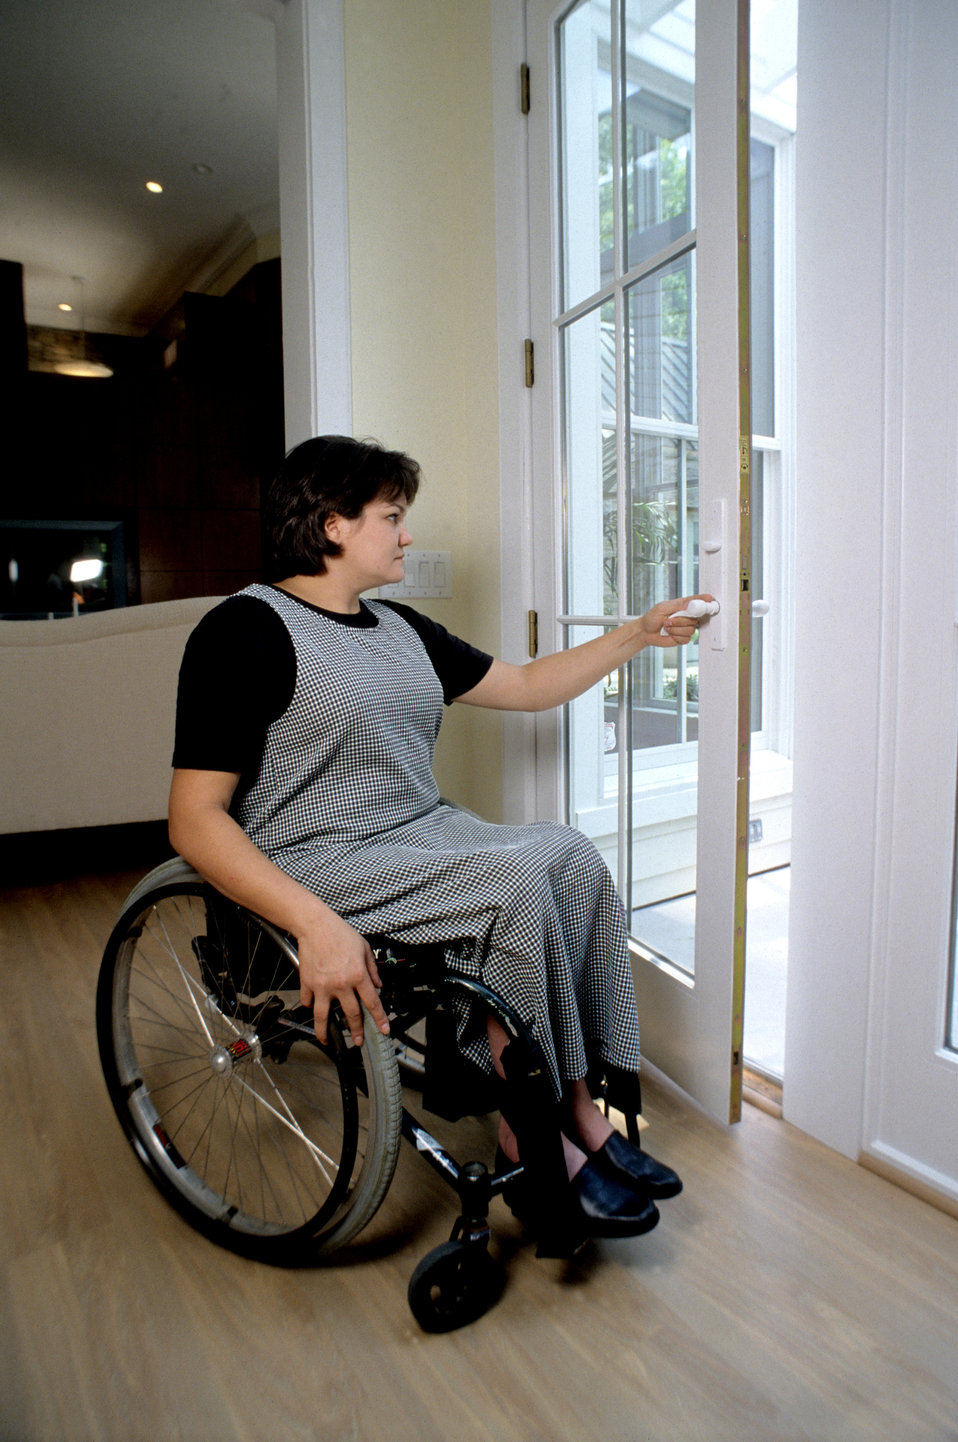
This is one of three images, (PHIL# 9162 - 9164), which depicted three different scenarios taking place at the same residential rear door involving three different people in the process of exiting the residence to the home's back deck. This particular image showed an adult mobility-challenged woman, who was in her wheelchair at this door, which was slightly opened, and was looking outside just before she was about to exit the residence. The door itself was of wood frame construction with glass panels, side hinged, and operated by using a levered handle. Implementing a universal design, there was ample space around the door, and an exterior porch level with the first floor. The door's windows allowed residents the opportunity to see who was outside, a 36' width that provided for easy passage by all, and a low threshold that reduced the entry barriers to those with mobility problems, as well as the likelihood of tripping for all.